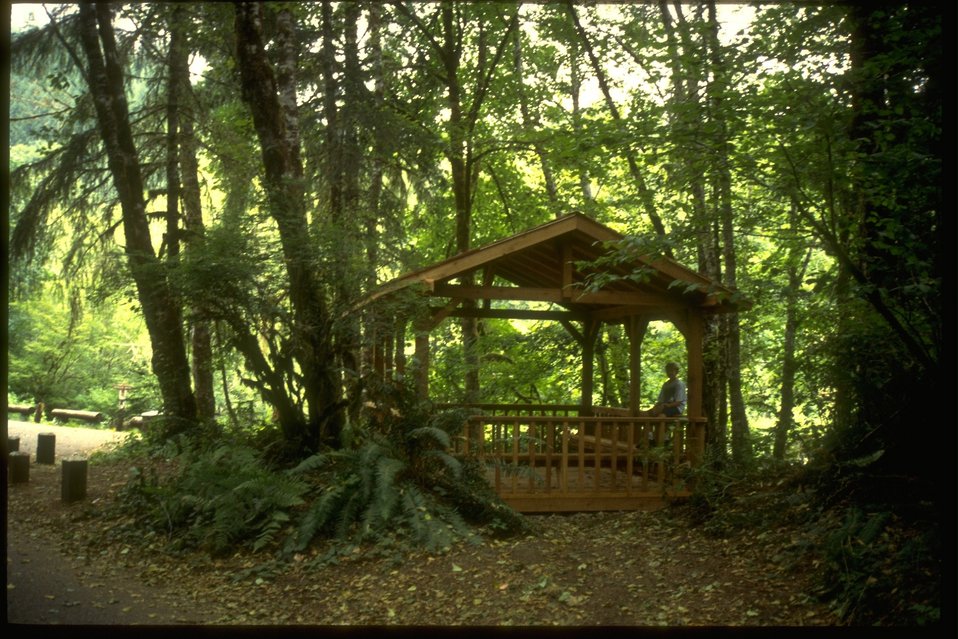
Picnic shelter at Whitaker Creek.